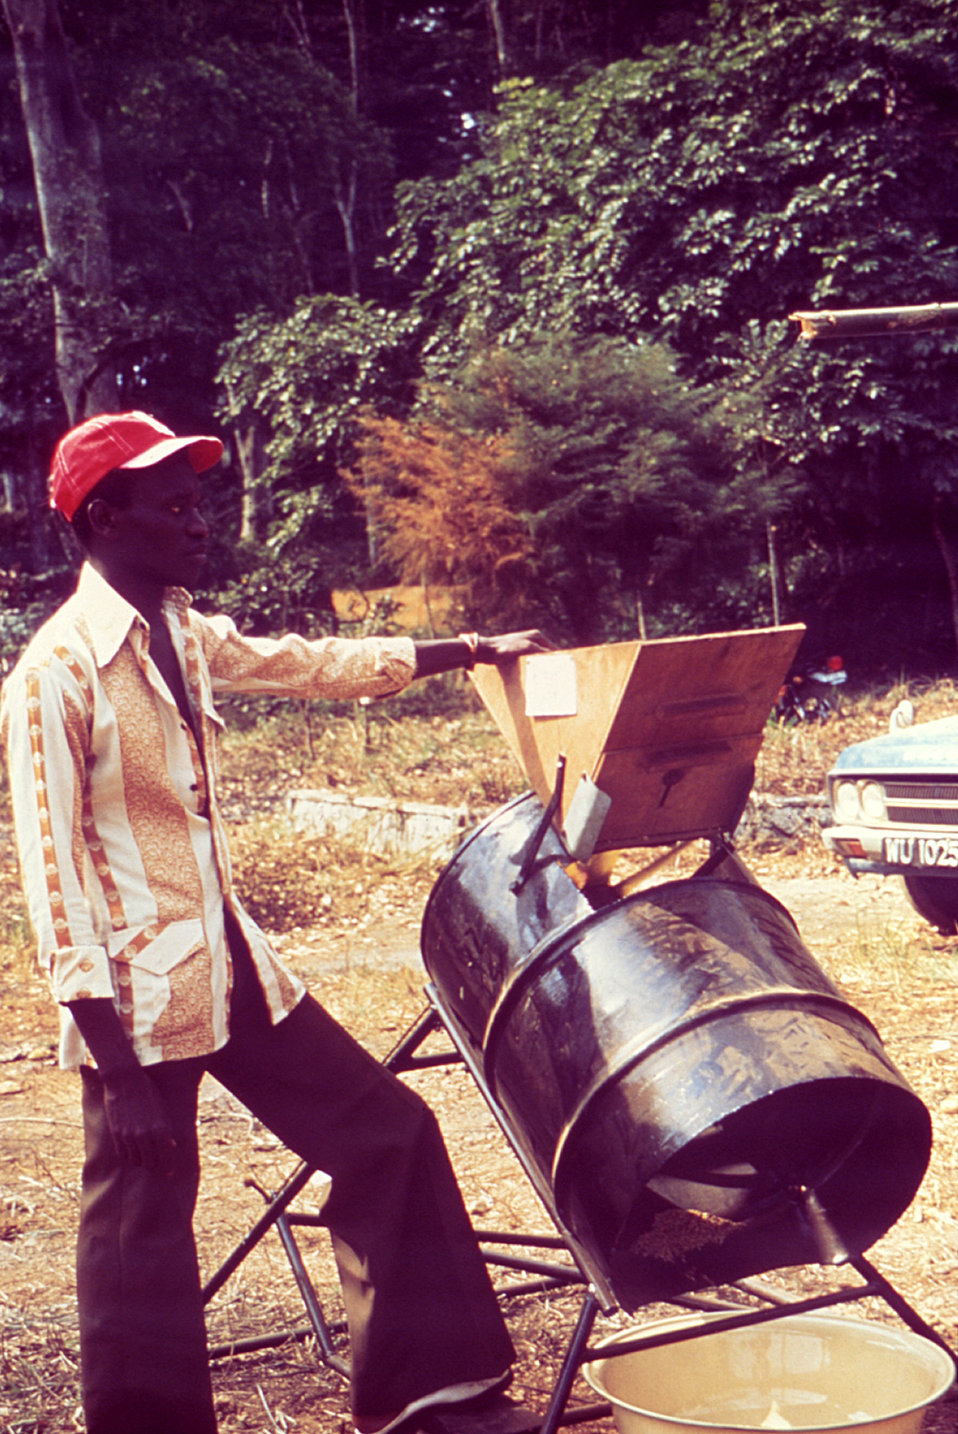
This image depicts a rice processing machine at the site of a 1976 Sierra Leone Lassa fever field study.